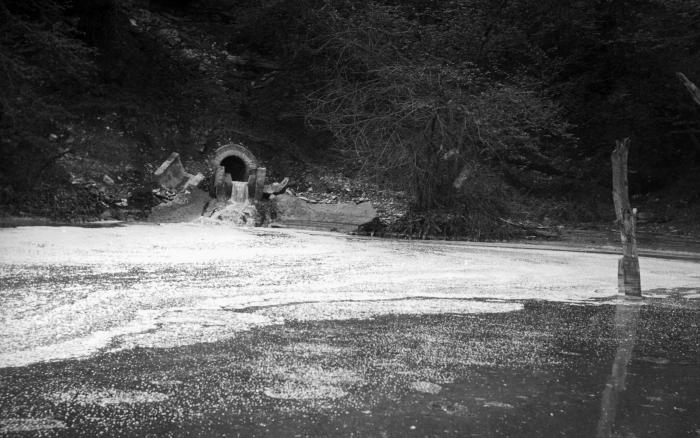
This historic 1928 photograph showed the Lake Street sewer outlet as it was disgorging untreated sewage into the Mississippi River in Minneapolis, Minnesota.